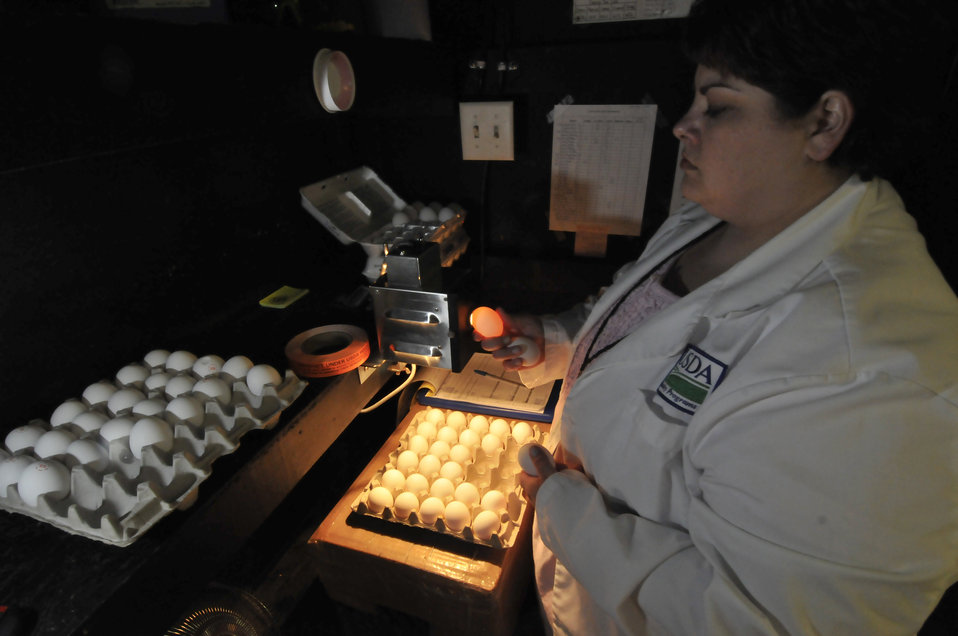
A U.S. Department of Agriculture (USDA) Agricultural Marketing Service (AMS) Poultry Programs inspector Michelle Perez examines shell eggs by candling at Cal-Maine Foods Inc. in Green Forest, Arkansas on March 24, 2010. Candling is a method used in embryology to study the growth and development of an embryo inside an egg. The method uses a bright light source behind the egg to show details through the shell, and is so called because the original sources of light used were candles. All shell eggs are eligible for the grading and certification services provided by the USDA AMS Poultry Programs.